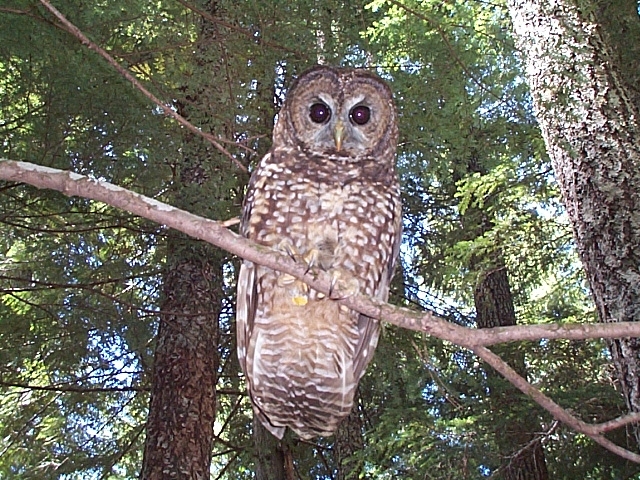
Adult Spotted Owl